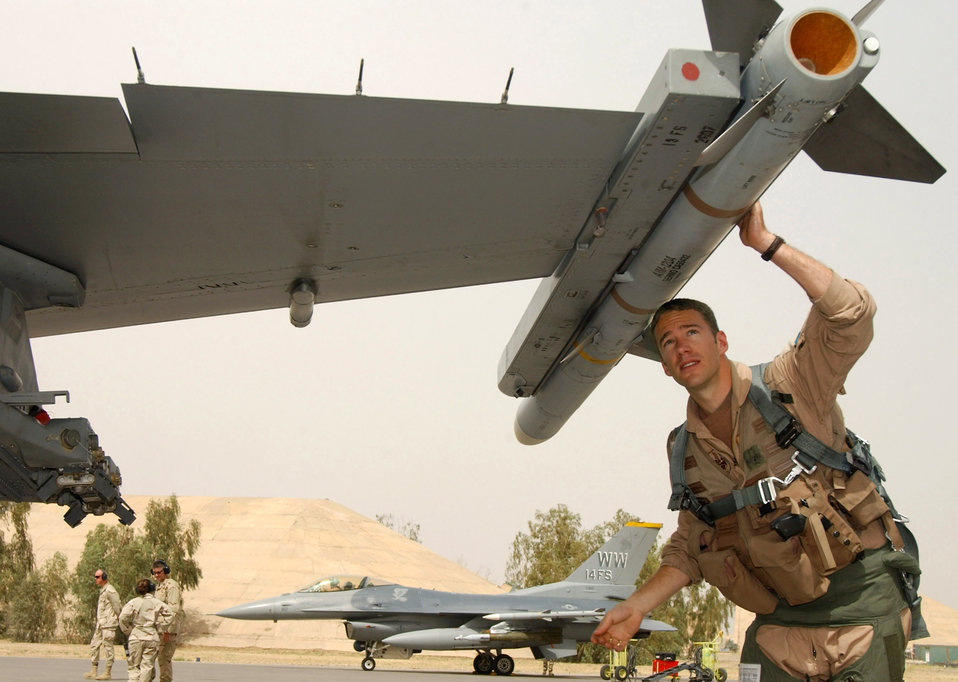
Misawa squadrons swap out Iraqi mission

Capt. Bryan Spence inspects an F-16 Fighting Falcon before a combat mission May 30 at Balad Air Base, Iraq. He is an F-16 pilot with the 14th Expeditionary Fighter Squadron deployed from the 14th Fighter Squadron at Misawa Air Base, Japan.